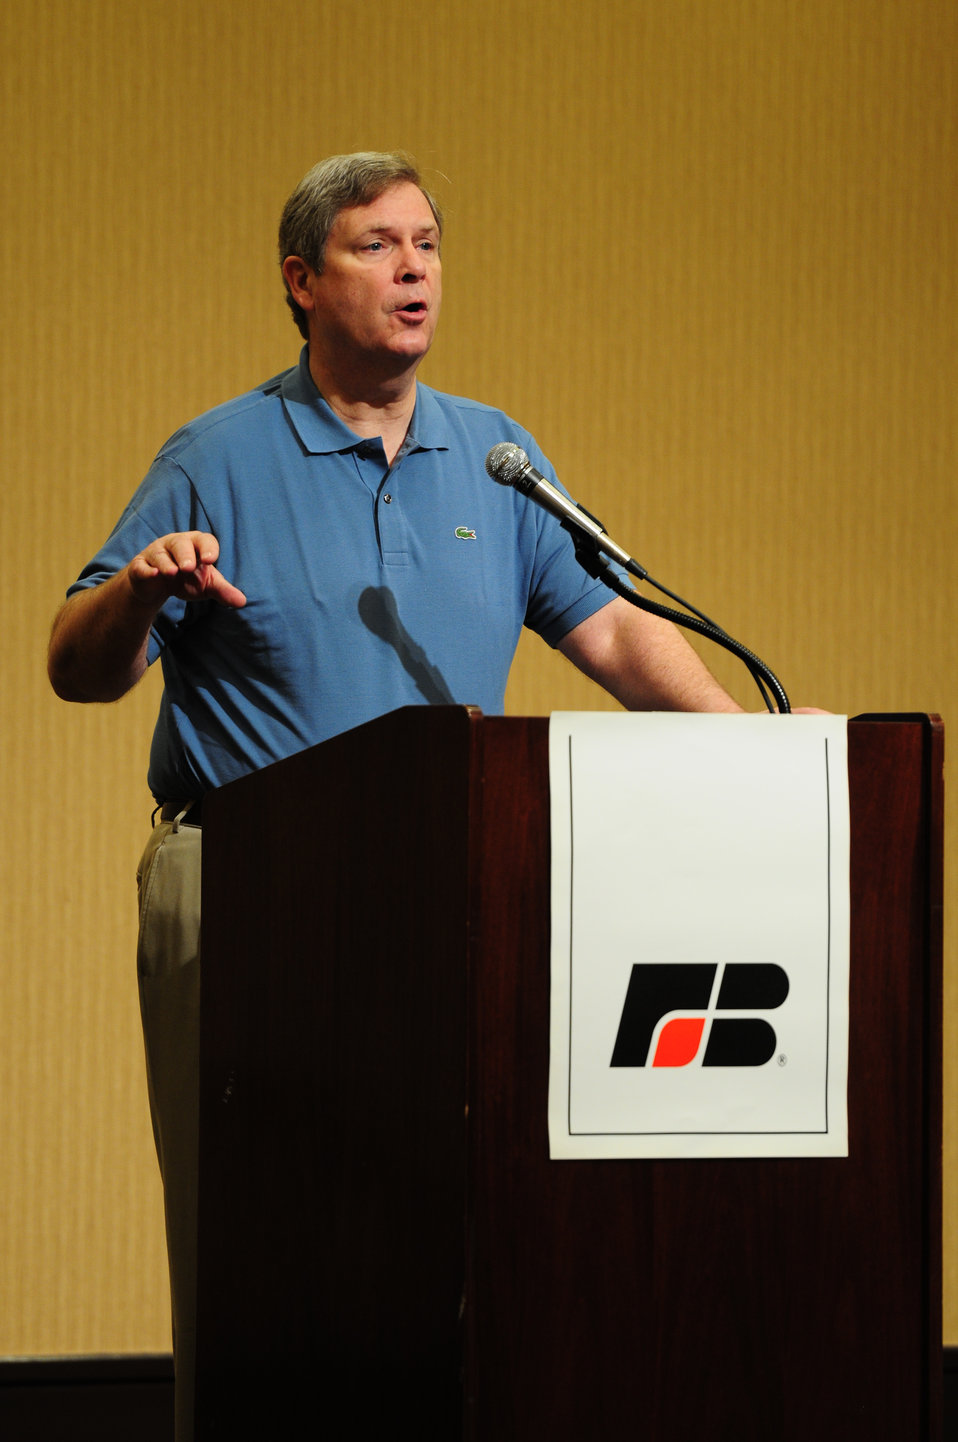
Agriculture Secretary Tom Vilsack speaks at the Iowa Farm Bureau event at the Sheridan Waikiki, in Honolulu, Hawaii, on Sunday, January 8, 2012.